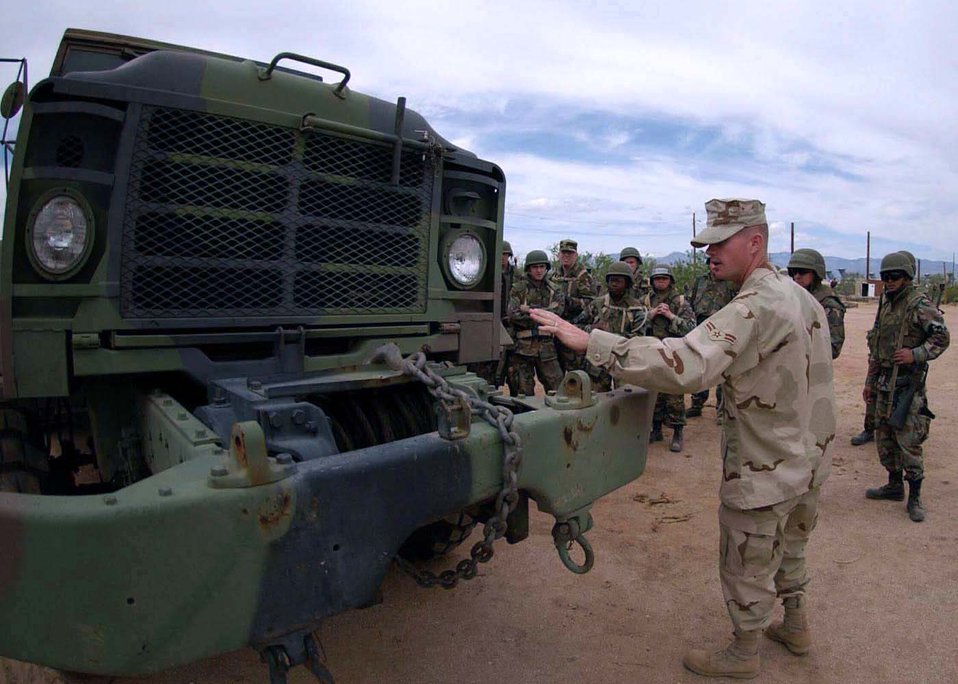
Contingency crawl

DAVIS-MONTHAN AIR FORCE BASE, Ariz. -- Airman 1st Class Jason Nelson teaches Airmen about convoys and vehicle safety during a deployment training class here. The training prepares Airmen for deployment and day-to-day life during contingency. Airman Nelson is assigned to the 355th Logistics Readiness Squadron.